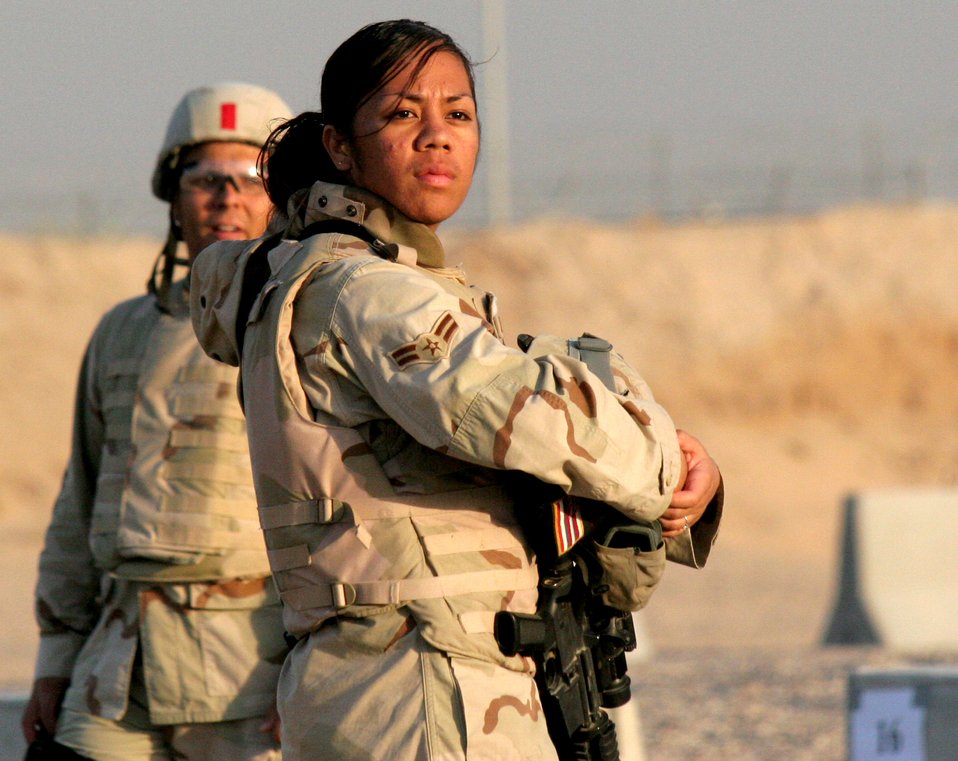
Waiting for my ride

An Airman with the 886th Expeditionary Security Force Squadron looks on as she waits for a flight out of Camp Bucca, Iraq, Sept. 25.